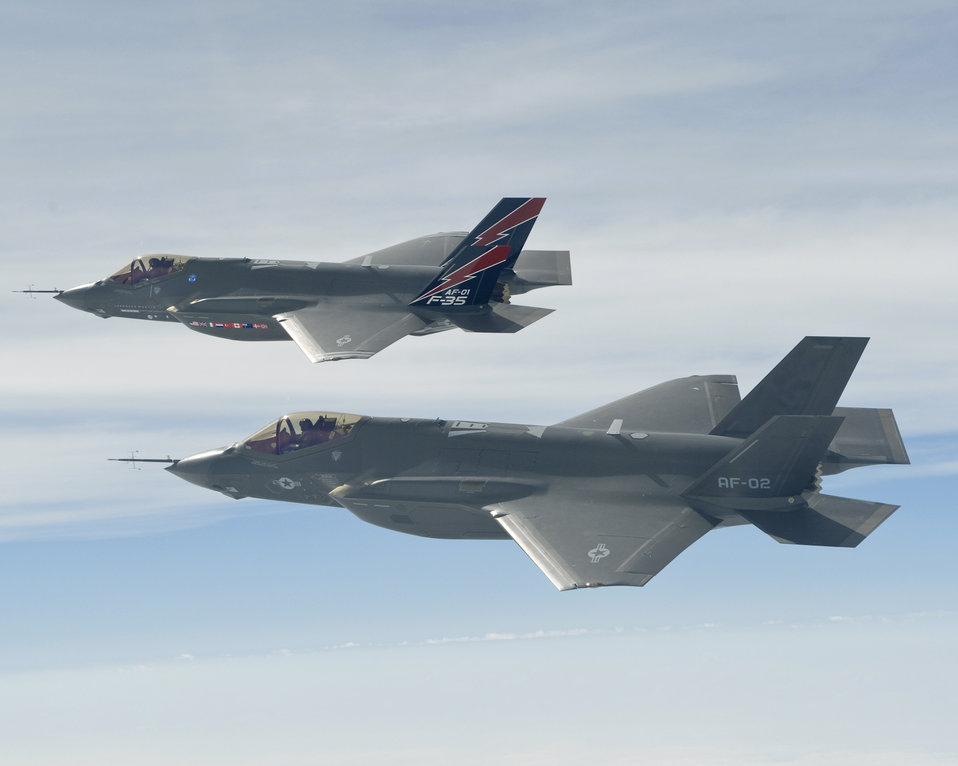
F-35A Lightning II

AF-1 (rear) and AF-2, F-35A Lightning II joint strike fighters, complete a test flight May 11, 2010, from the Lockheed plant in Fort Worth, Texas, in preparation for the nonstop flight May 17 to Edwards Air Force Base, Calif., to begin extended flight test operations. Air Force test pilot Lt. Col. Hank Griffiths and Lockheed Martin chief test pilot Jon Beesley flew the jets nonstop in the first multi-ship, long-range F-35 flight.